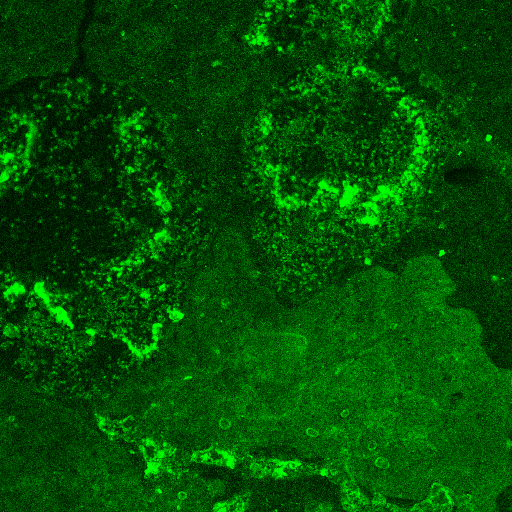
Hydroxyapatite crystal

Deposits of hydroxyapatite crystal light up bright green where they've been tagged with a new peptide created at NIST to bond specifically to the compound. The peptide has been linked to a fluorescent stain for imaging.